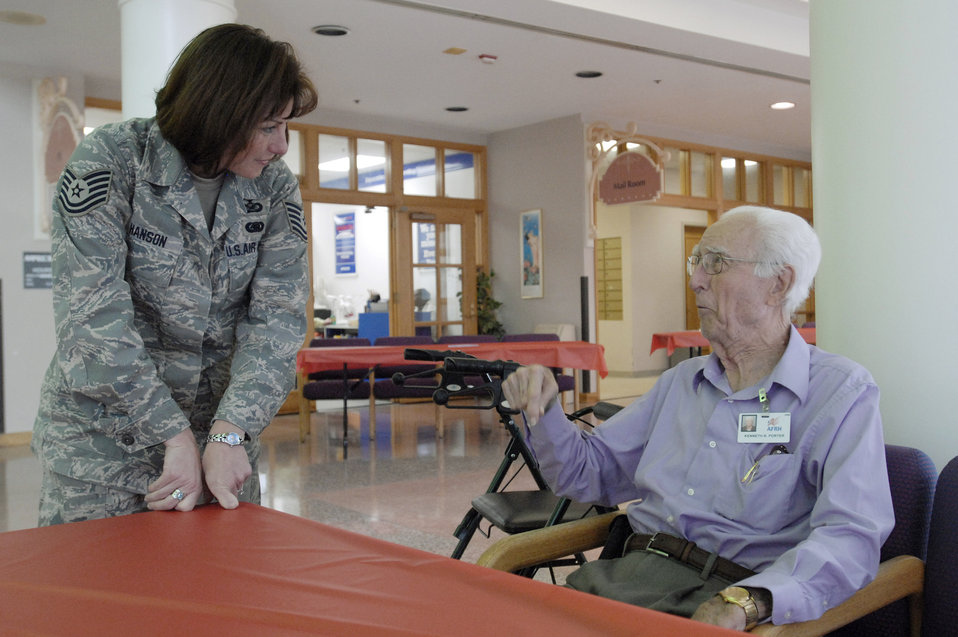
Joint Enlisted Council lift spirits at veterans home

Tech. Sgt. Phyllis Hanson chats with retired Chief Master Sgt. Kenneth Porter Oct. 16, 2009, during a visit to the U.S. Soldier's and Airmen's Home in Washington, D.C. Sergeant Hanson made the visit with the National Capital Region Joint Enlisted Council to lift the spirits of the residents. Mr. Porter who originally joined the Navy and eventually the U.S. Army Air Corps during World War II, said he really looks forward to the visits with young servicemembers.